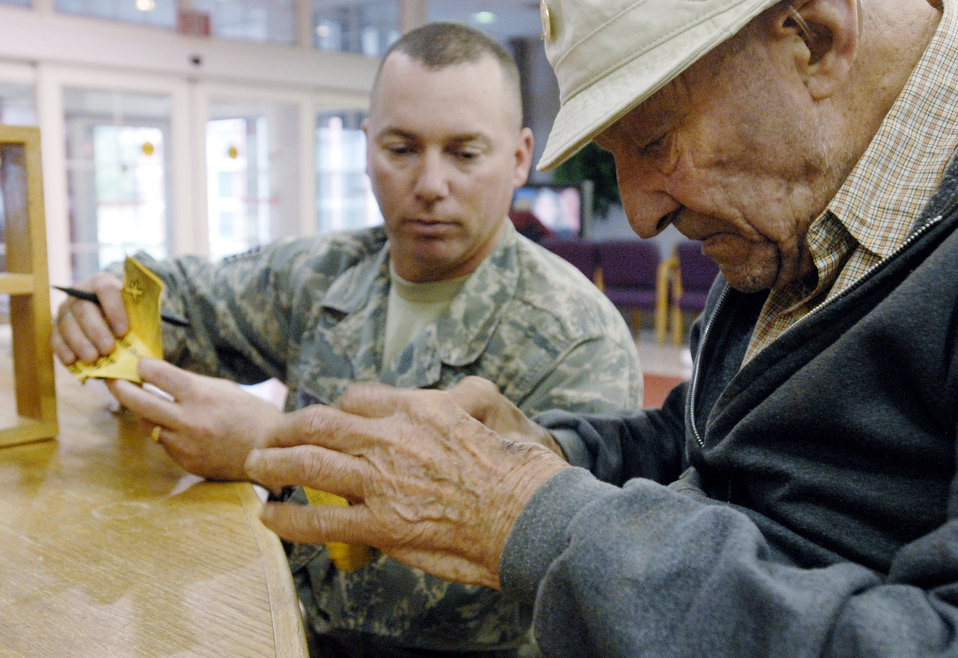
Joint Enlisted Council lift spirits at veterans home

Tech. Sgt. Chris Orbits gets a lesson on making origami birds from retired Navy Petty Officer Harry Casino Oct. 16, 2009, during a visit to the U.S. Soldier's and Airmen's Home in Washington, D.C. Sergeant Orbits made the visit with the National Capital Region Joint Enlisted Council.